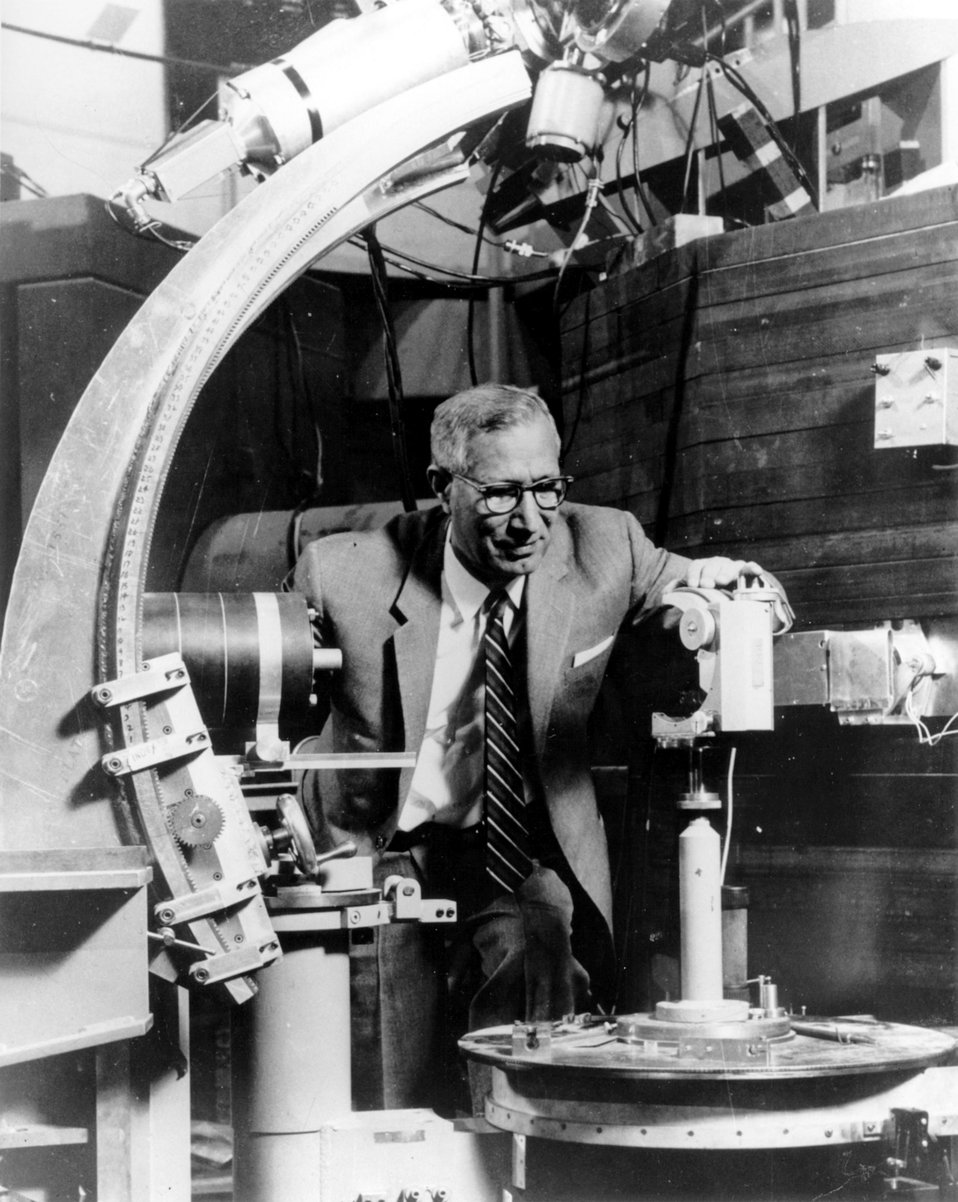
Solid state physicist studies radiation damage in graphite bombarded by accelerated ions.
c.1965